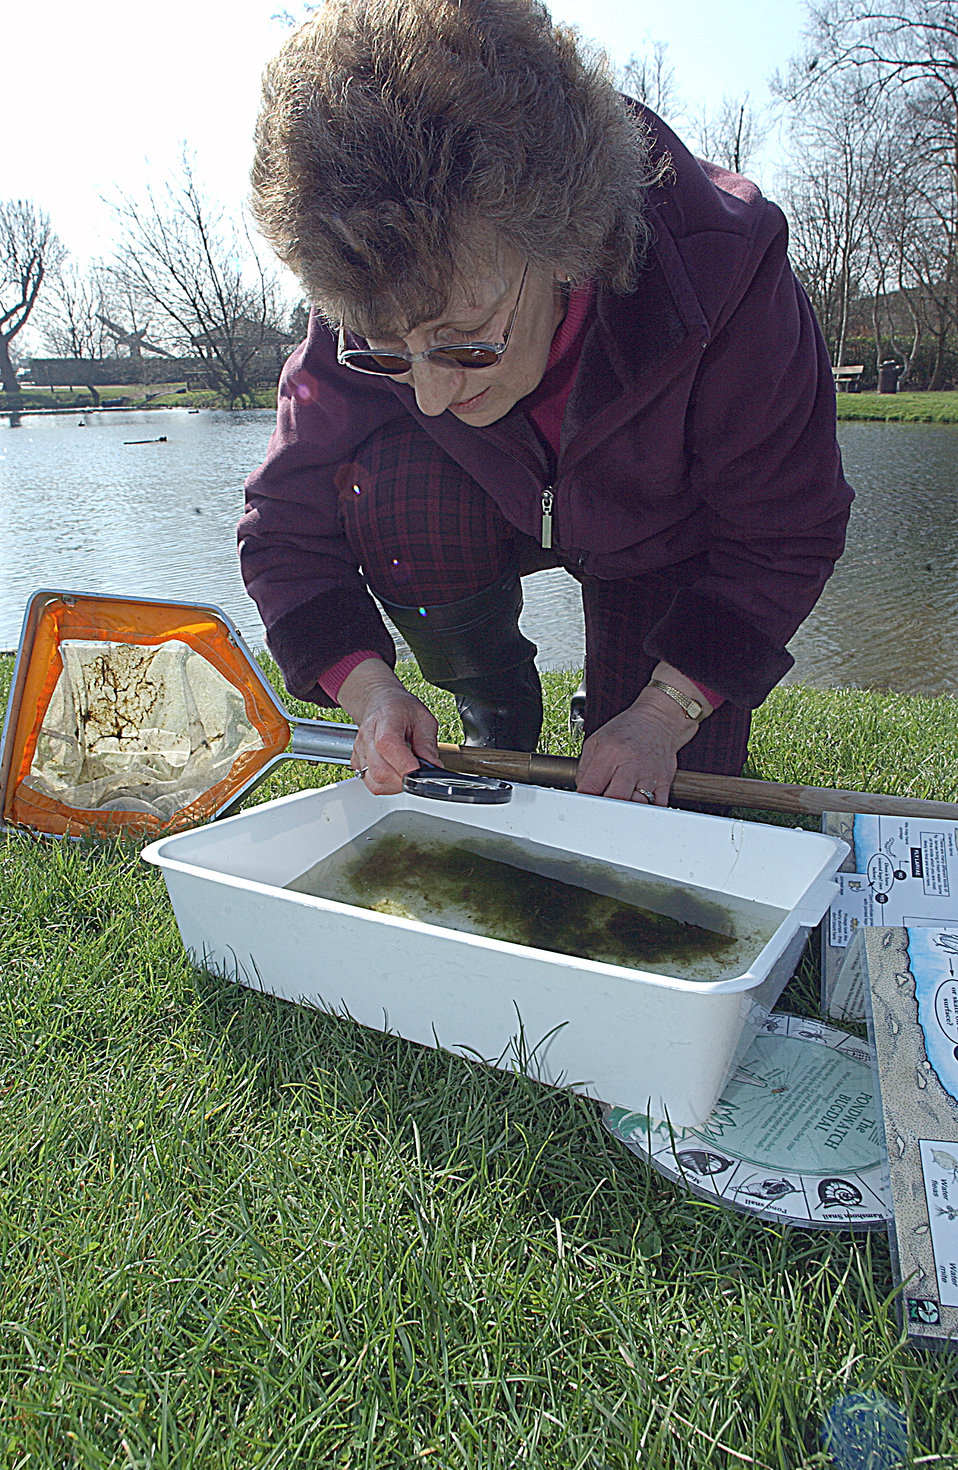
Just dipping

ROYAL AIR FORCE LAKENHEATH, England -- Jean Dennett demonstrates pond dipping here March 30. Pond dipping is part of an environmental program here, aimed at third grade children for a better understanding of the eco system. Pond dipping consist of dipping a net into the pond and catching small water insects, creatures and larva for observation. Mrs. Dennett is an enviornmental flight administrator with the 48th Civil Engineering Squadron.